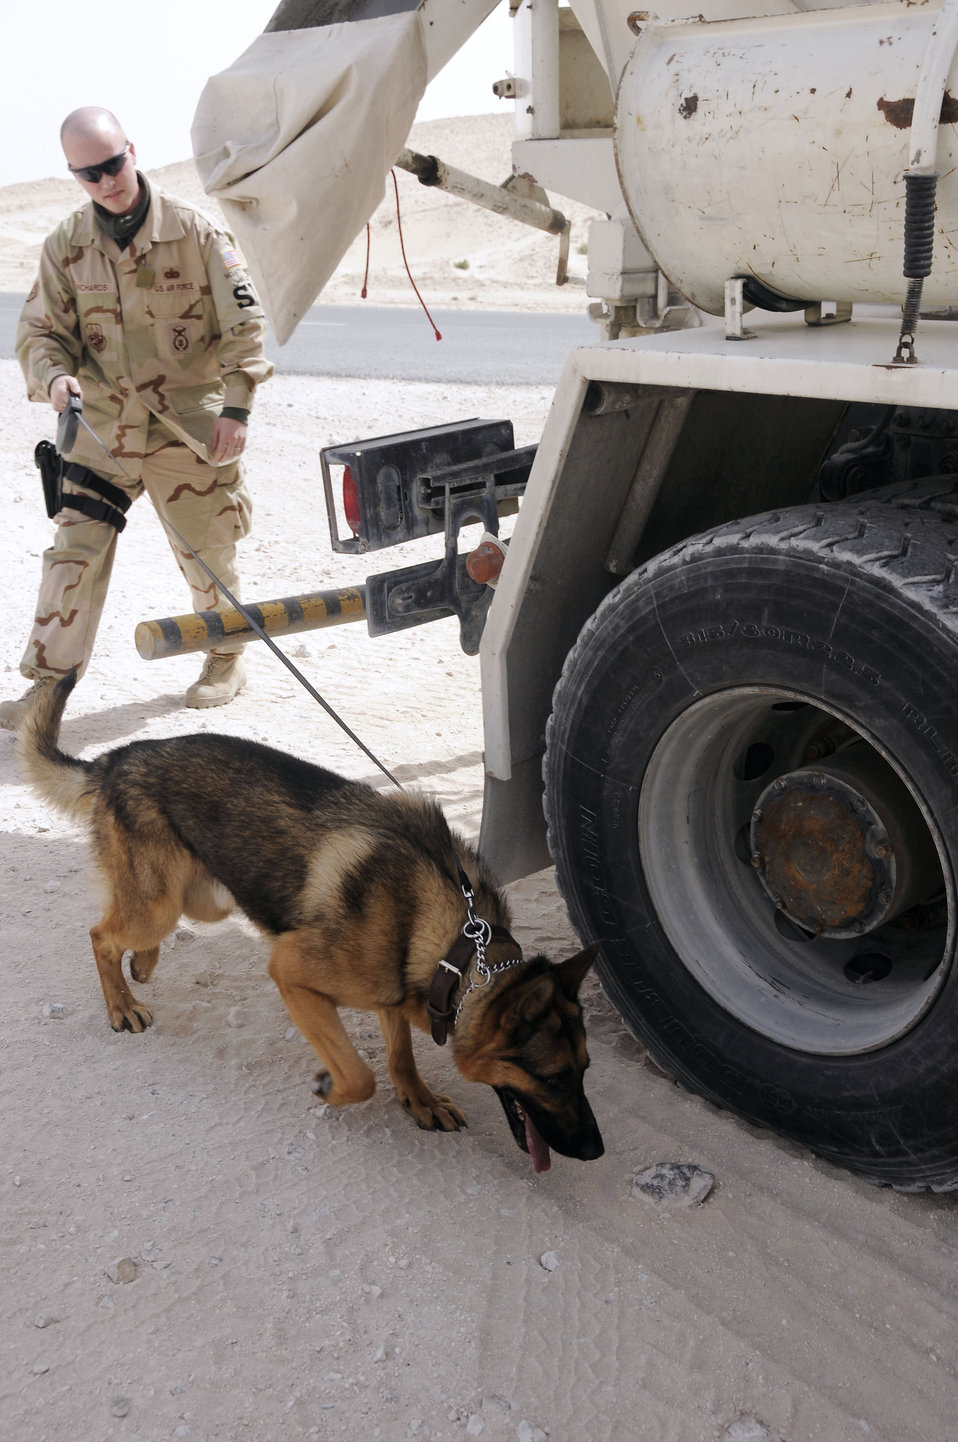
K-9 team keeps crime on a leash

Staff Sgt. Kyle Richards and Sano, a military working dog, conduct a vehicle search for illegal substances March 6 in Southwest Asia. Sergeant Richards and Sano work as a team to enforce security basewide.